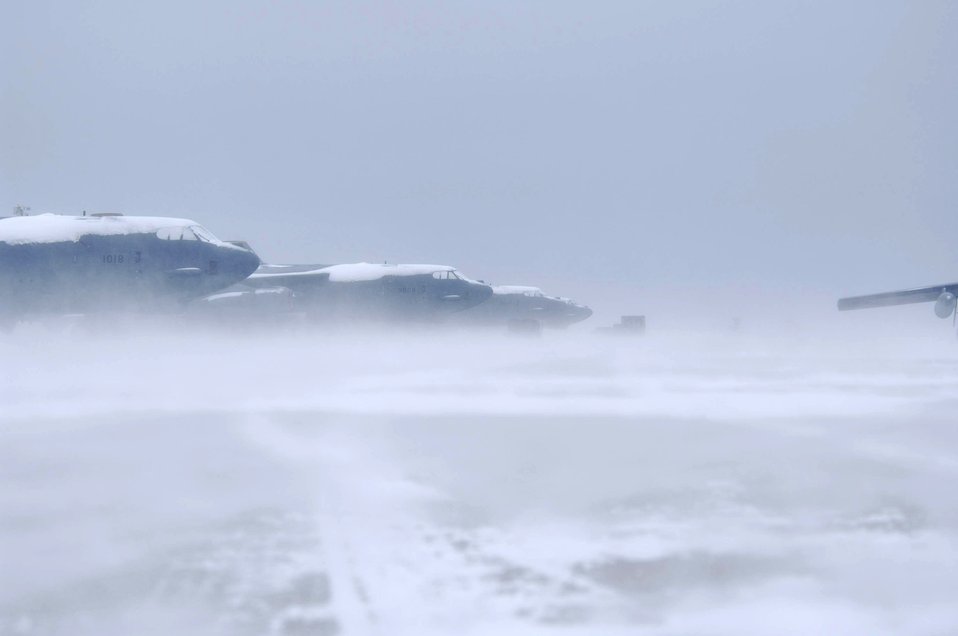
B-52 undergoes synthetic-fuel cold weather testing

A B-52 Stratofortress, like these shown, powered by a mix of synthetic fuel arrived at Minot Air Force Base, N.D., Jan. 17 for cold weather testing. This is the the last step in the testing and certification process to help reduce Air Force dependence on imported fuel.